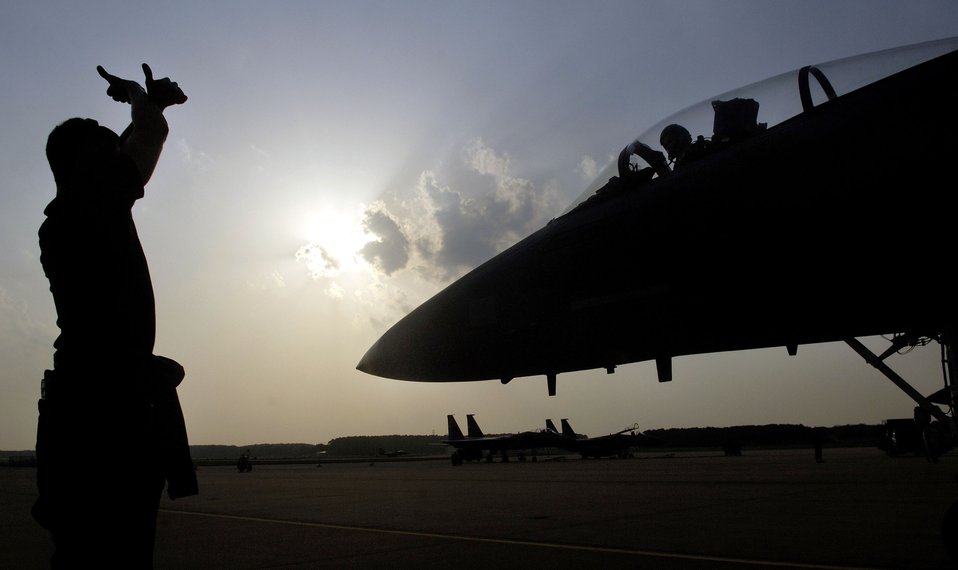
Langley aircraft return home

Senior Airman Ryan Rogers marshals in Capt. Matt Bruckner at Langley Air Force Base, Va., on July 28. The 27th, 71st and 94th Fighter Squadrons have been flying sorties and participating in exercises around the country while upgrade repairs were being done to their home runway. Airman Rogers is a crew chief with the 71st Aircraft Maintenance Unit. Captain Bruckner is an F-15 Eagle pilot with the 71st FS.